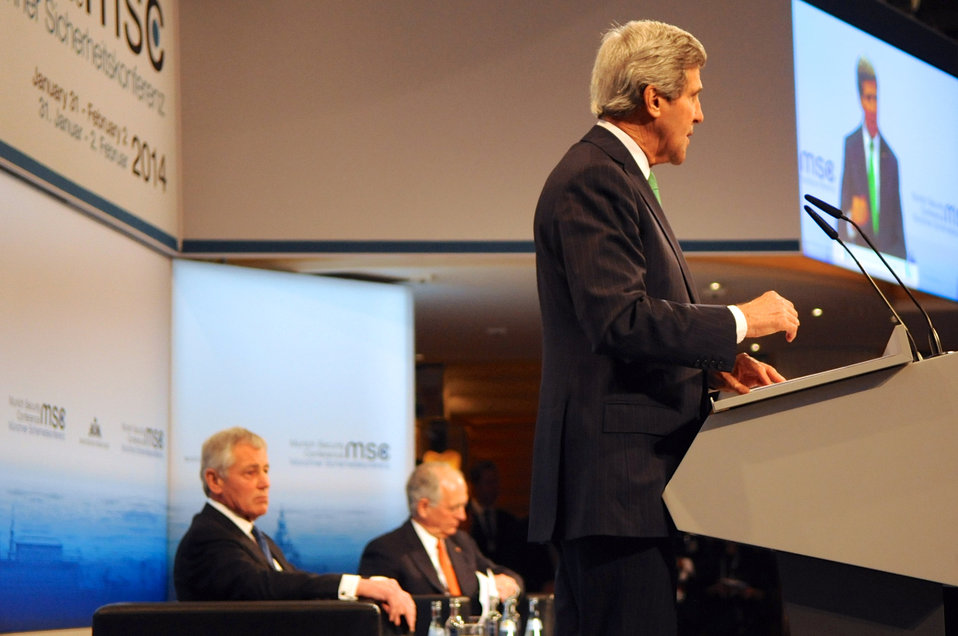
Secretary Kerry Addresses the 50th Munich Security Conference

U.S. Secretary of State John Kerry addresses the 50th Munich Security Conference before he and U.S. Secretary of Defense Chuck Hagel - led by former German Ambassador to the United Kingdom Wolfgang Ischinger, now conference chairman - answered questions from the audience in Munich, Germany, on February 1, 2014.